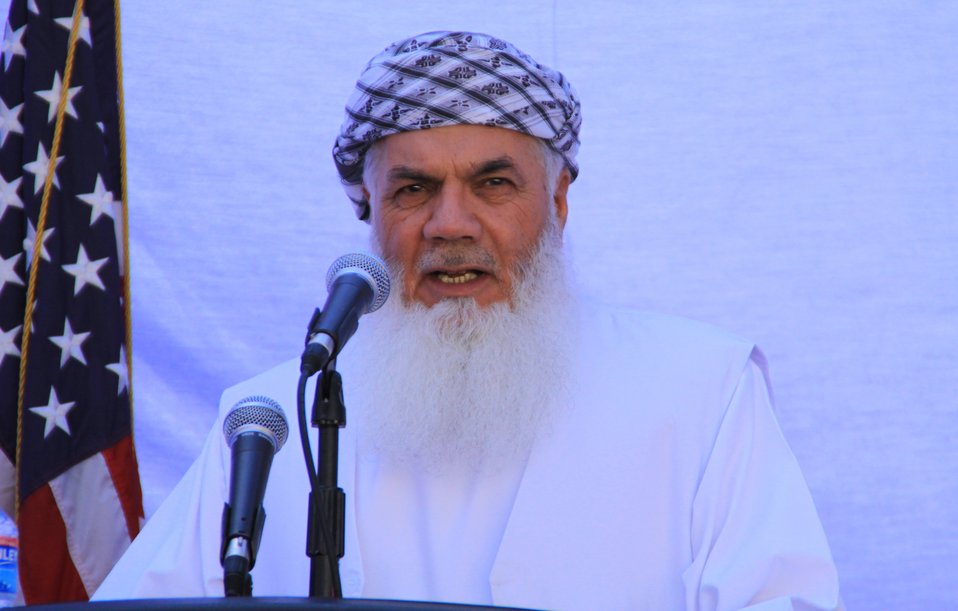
105 MW Tarakhil Power Plant Handover